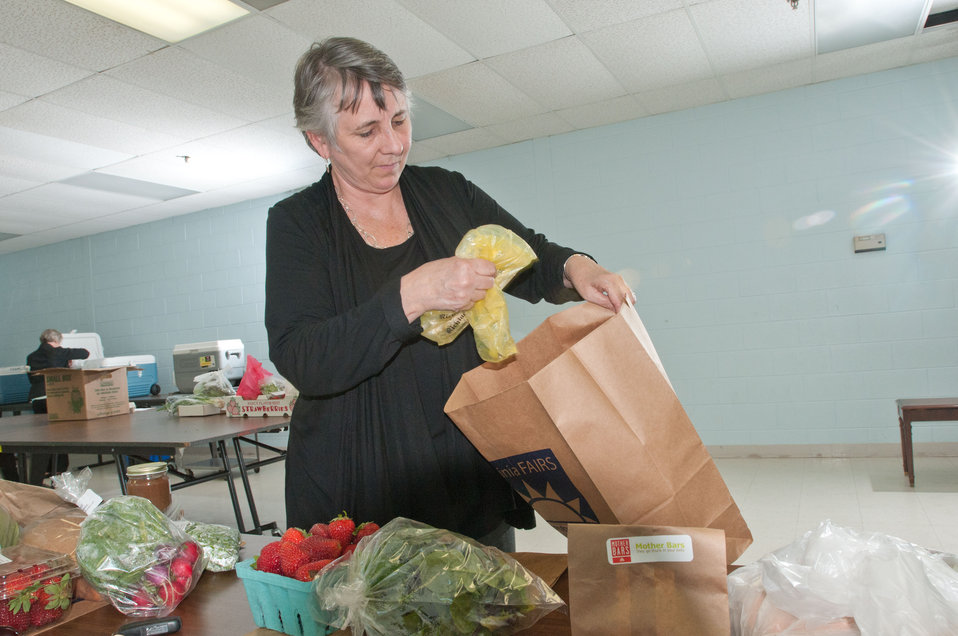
Carolyn Moul of Richmond, VA, came to the Fall Line Farms pick-up point at Bon Air United Methodist Church, in Richmond, VA, on Thursday, May 5, 2011. This is one of several pick-up points in the Richmond, VA area. This local food hub offers a wide variety of household food staples and specialty items. The difference from traditional co-ops is that members can pick their customized orders from an ever changing inventory of fruits, vegetables, meats, soaps, eggs, cheeses, flowers, honey, pastas, sauces, syrups, baked goods, mushrooms, flour and grains. Suppliers post what they have on a Lulus Local Food online listing and customers can make their selection. Every Thursday suppliers deliver orders to, one of several pick-up points, designated by the customers in or around the Richmond area.